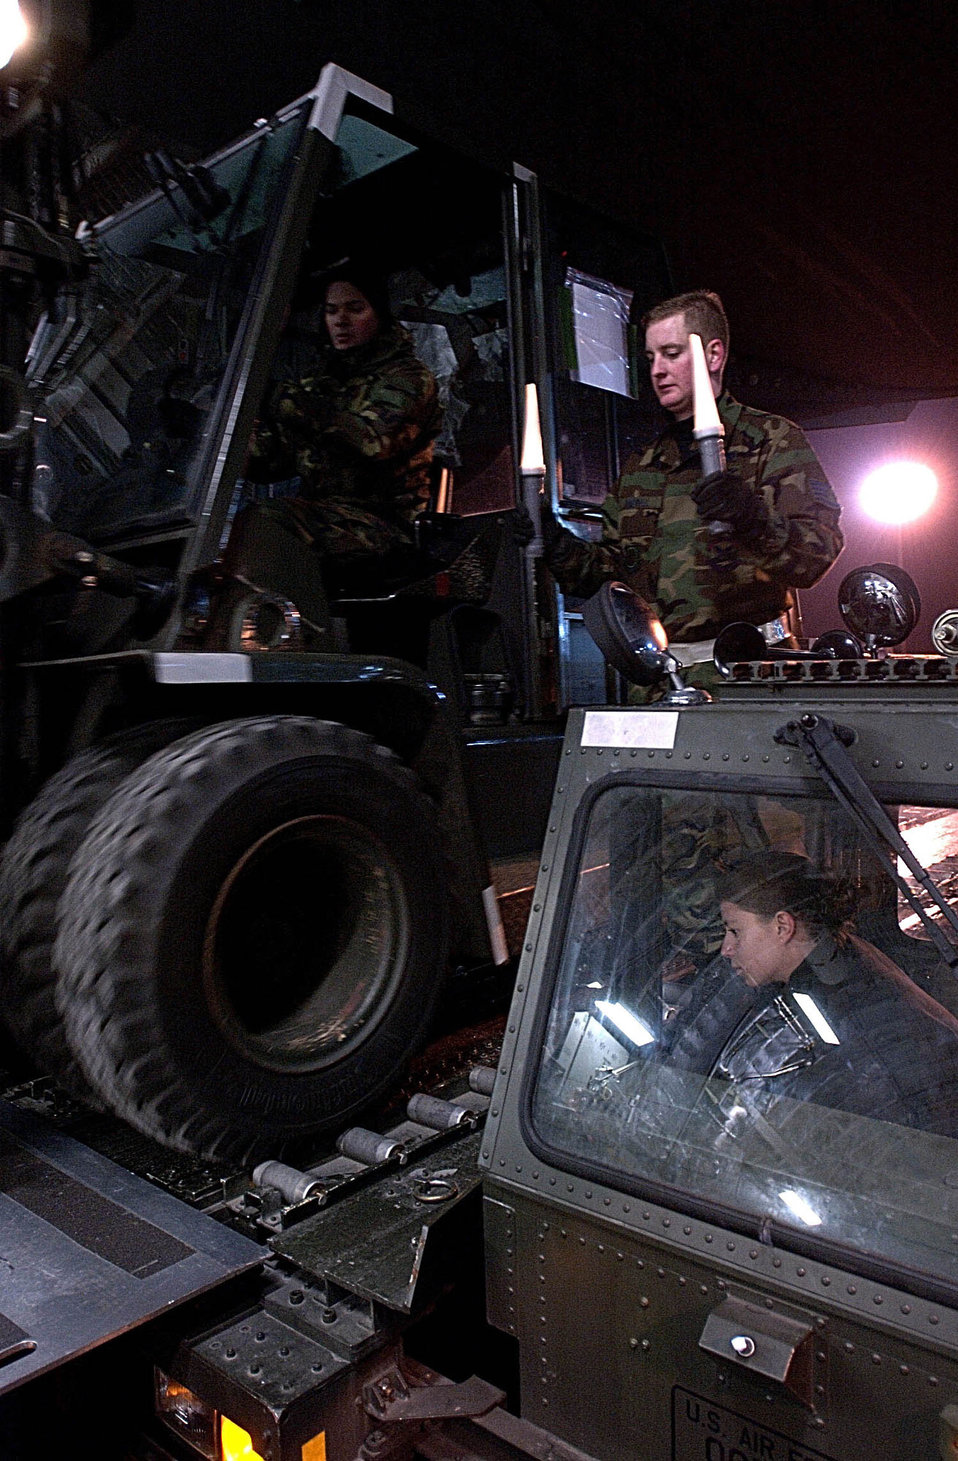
Work Loads

OPERATION ENDURING FREEDOM -- U.S. Air Force people from the 723rd Aerial Port Squadron at Ramstein Air Base, Germany, load a forklift aboard a C-17A Globemaster III cargo plane, Dec. 10. The forklift will be used to offload pallets of humanitarian aid at the airport in Ashgabat, Turkmenistan. The maximum payload capacity of the C-17 is 170,900 pounds, and its maximum gross takeoff weight is 585,000 pounds.